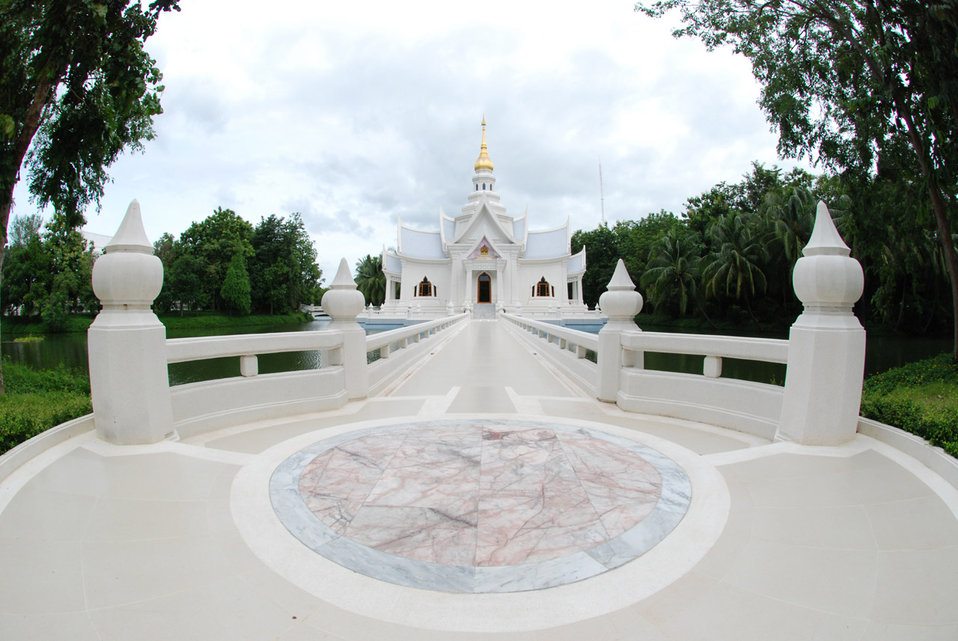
Meditation hall

This is one of the most beautiful buildings in the monastery.